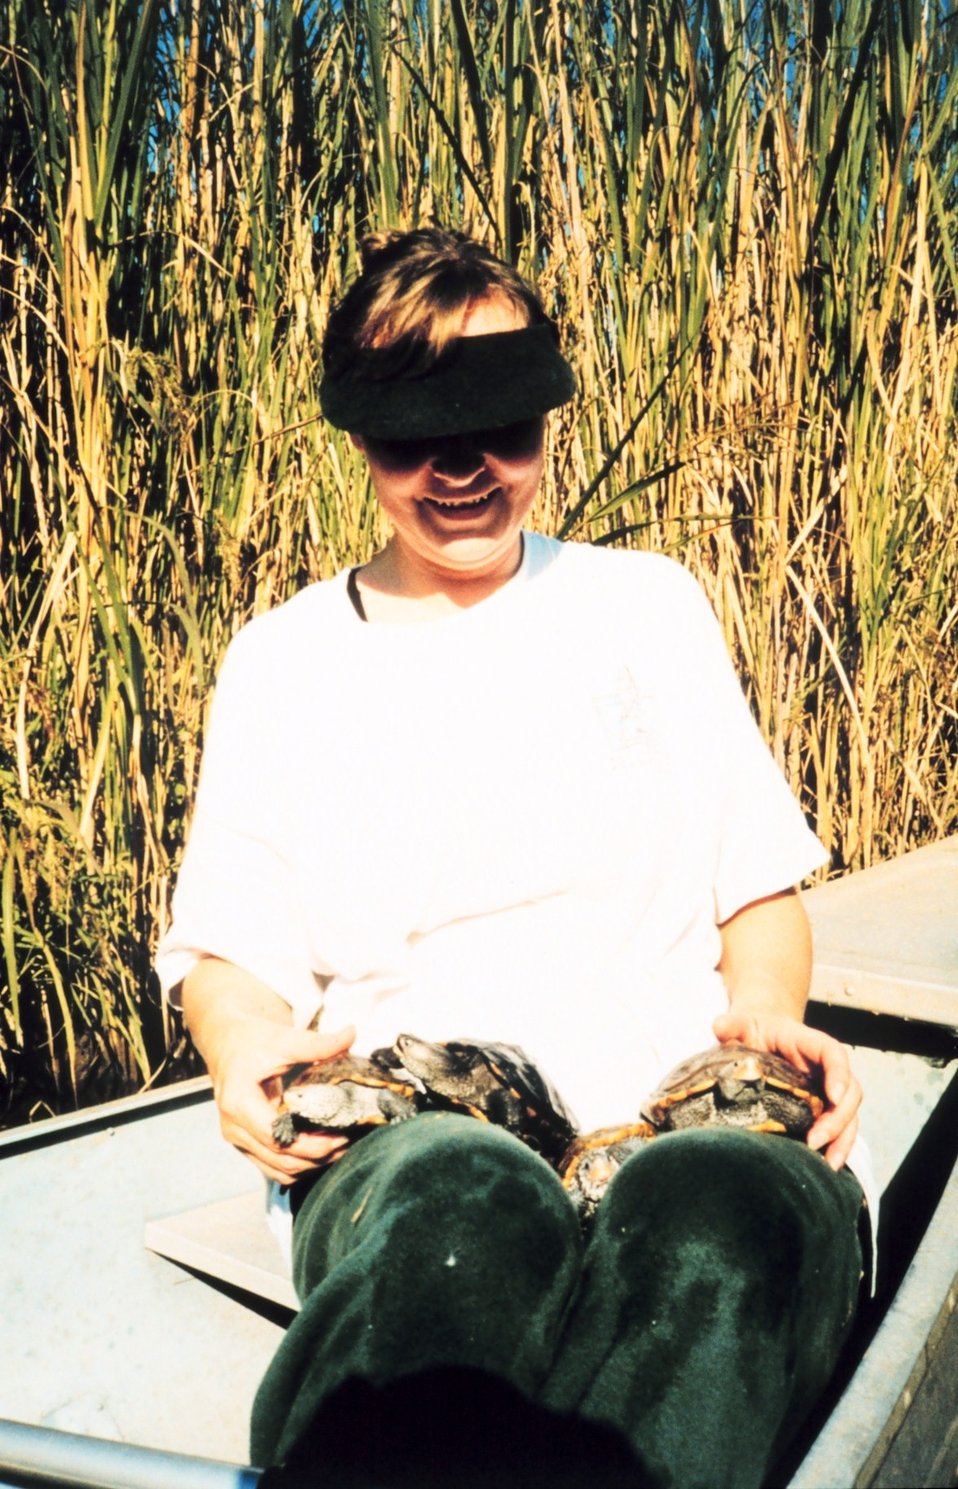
4 diamondback terrapins about to be released in wild.